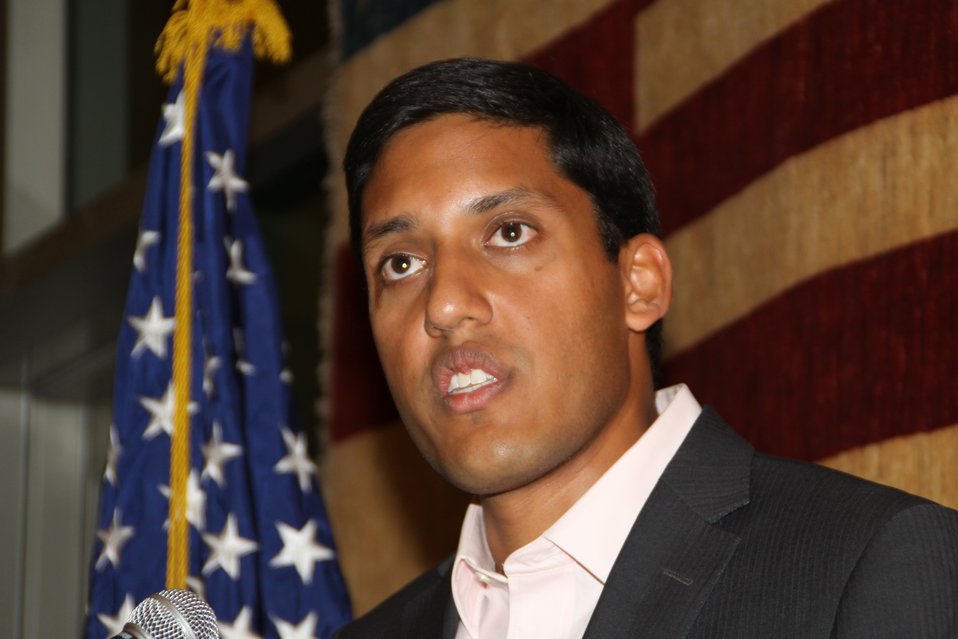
US Embassy Town Hall July 21, 2010